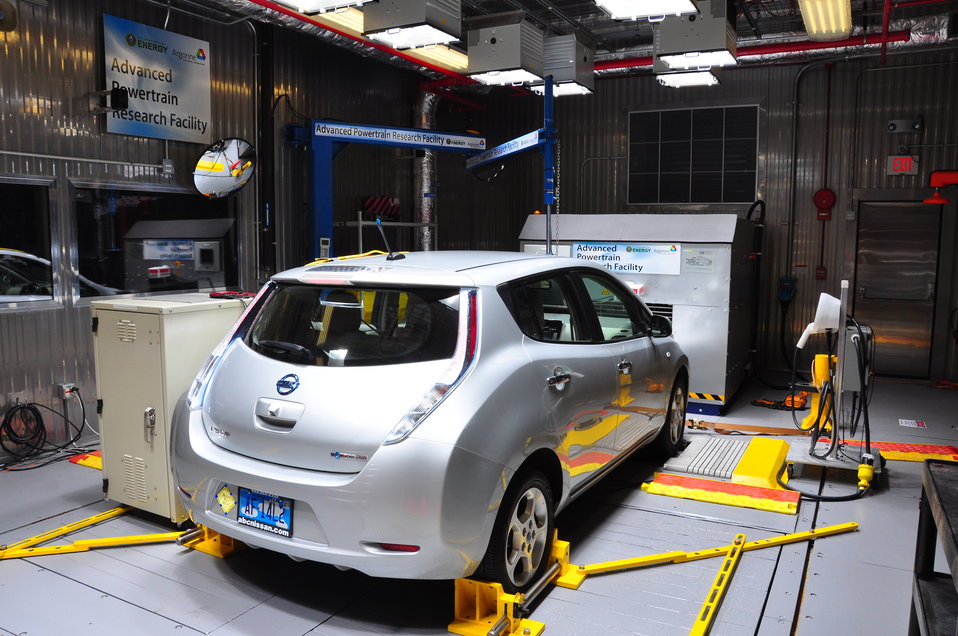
AN ELECTRIC VEHICLE UNDERGOES HOT TEMPERATURE TESTING ON THE DYNAMOMETER AT ARGONNE NATIONAL LABORATORY'S ADVANCED POWERTRAIN RESEARCH FACILITY (APRF)

Equipped with solar lamps, the APRF's Environmental Test Cell can get up to 95 degrees Fahrenheit. The facility also allows for cold temperature testing down to 20 degrees Fahrenheit.